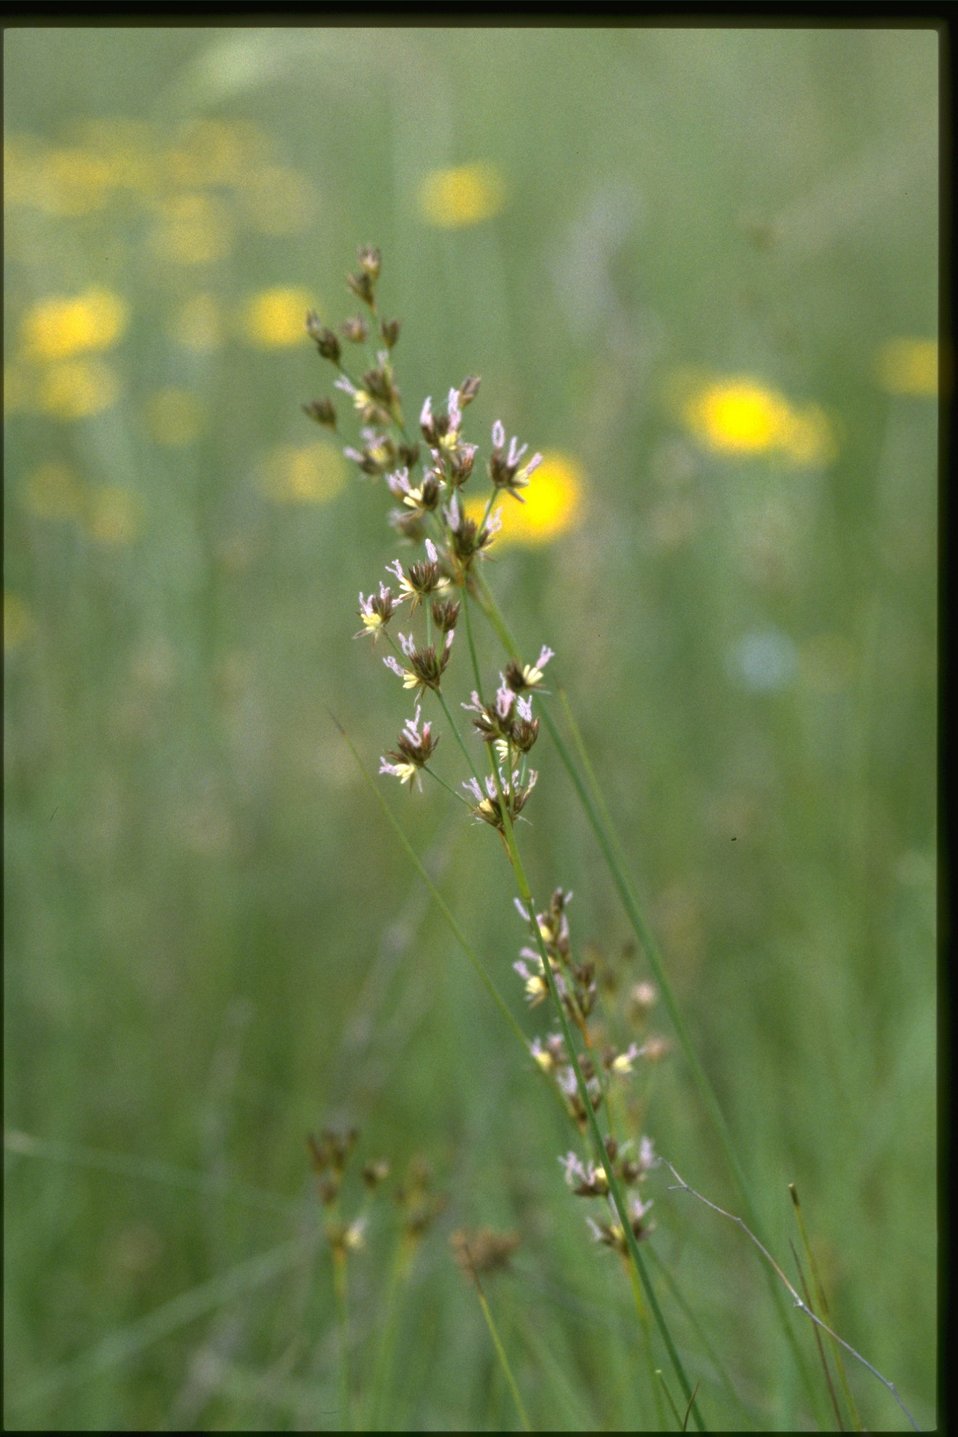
Closeup shot of Luncus.